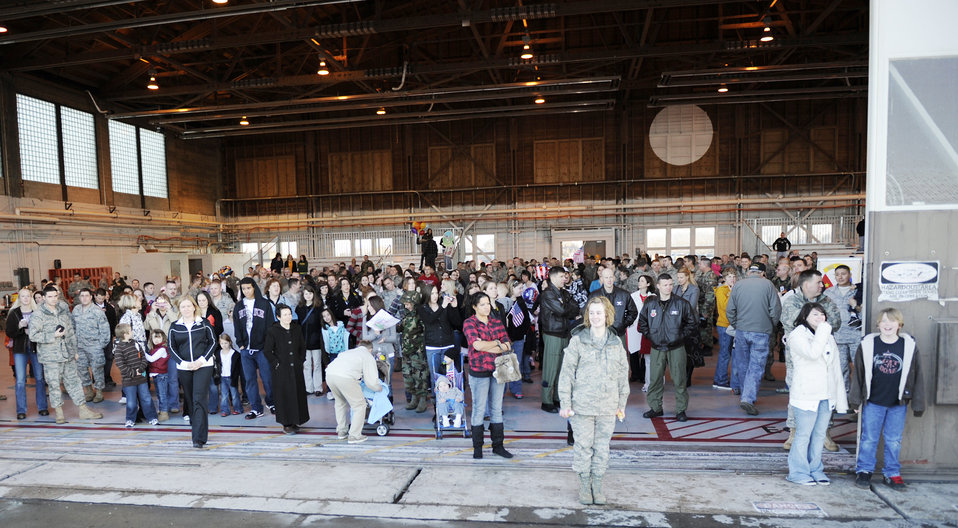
Squadron returns from South Korea

Families of the 389th Fighter Squadron watch in Hangar 201 as their loved ones return from a four-month deployment to South Korea Jan. 20, 2010, at Mountain Home Air Force Base, Idaho. More than 300 members of the 389th FS returned from their deployment in support of U.S. government and Department of Defense global engagement strategies.